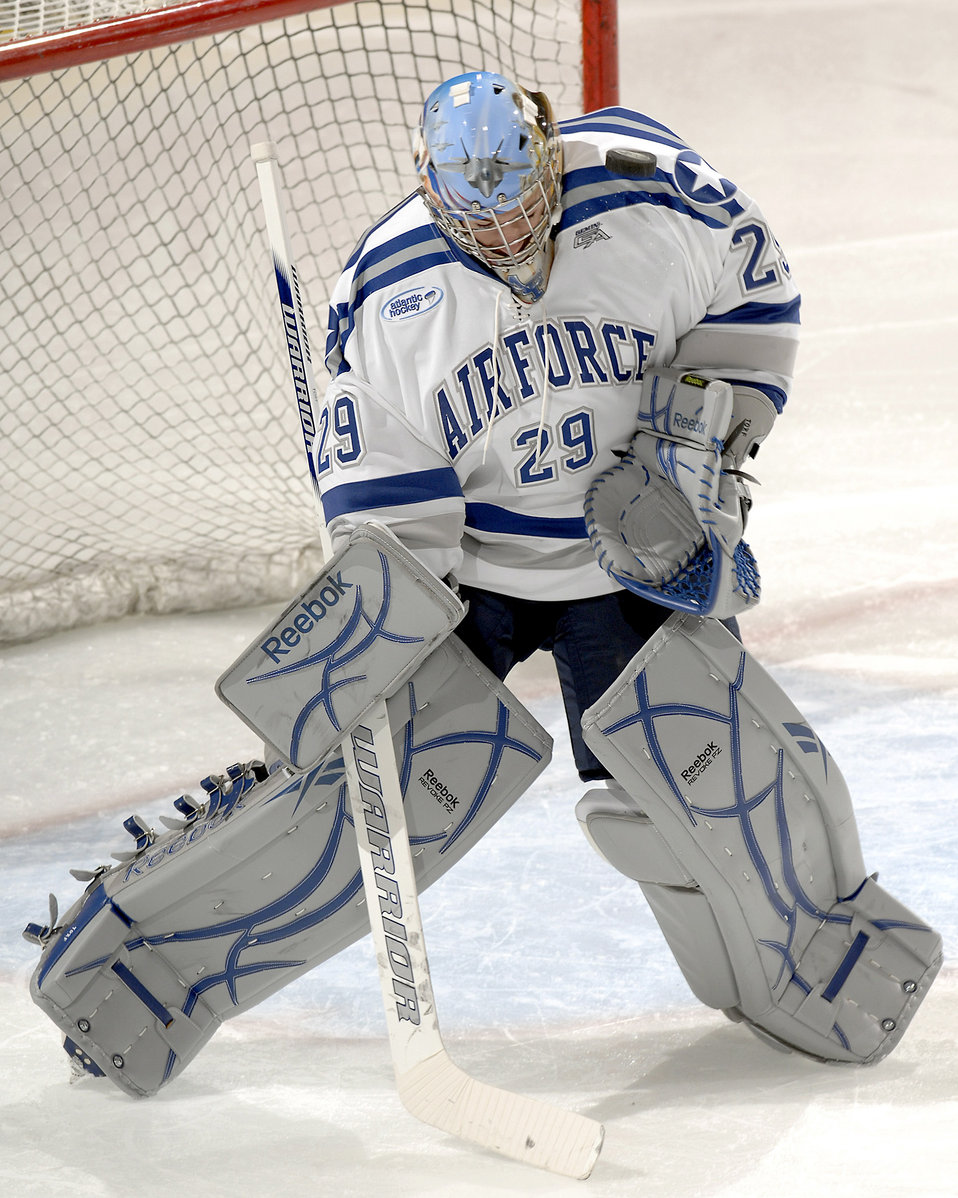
Falcons defeat the Pronghorns

Air Force Academy freshman Jason Torf makes a save during a hockey exhibition game against the University of Lethbridge from Alberta, Canada, Oct. 4, 2010, at the Cadet Ice Arena in Colorado Springs, Colo. Torf made six saves and did not allow a goal as the Falcons defeated the Pronghorns 4-3 in a 5-minute sudden death overtime.